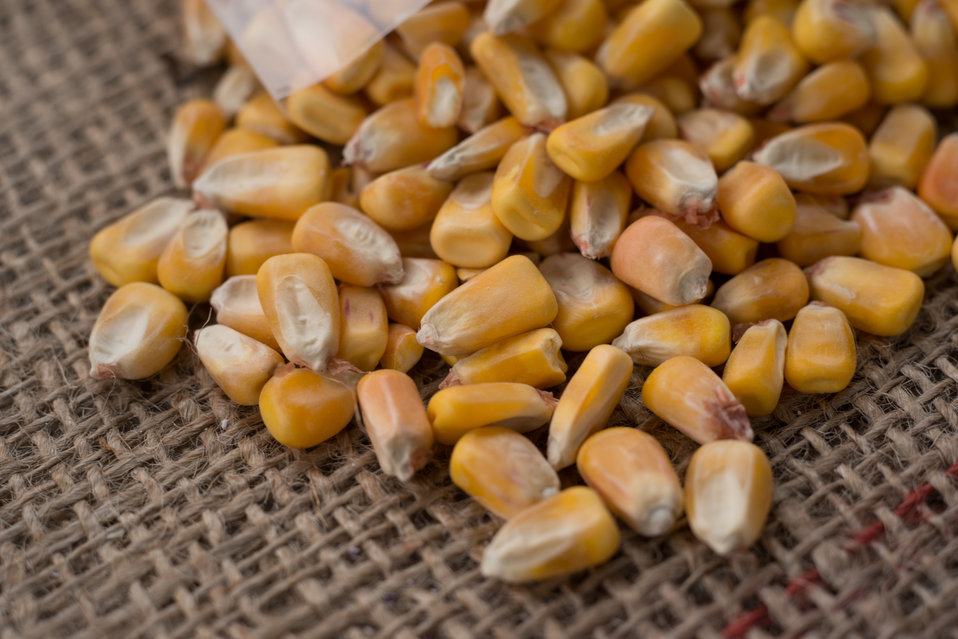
Dry corn at the U.S. Department of Agriculture (USDA) demonstration garden is being ground at the summer farmers market’s final outdoor market of the season at the USDA Whitten Building east parking lot in Washington, DC, on Friday, November 22, 2013.